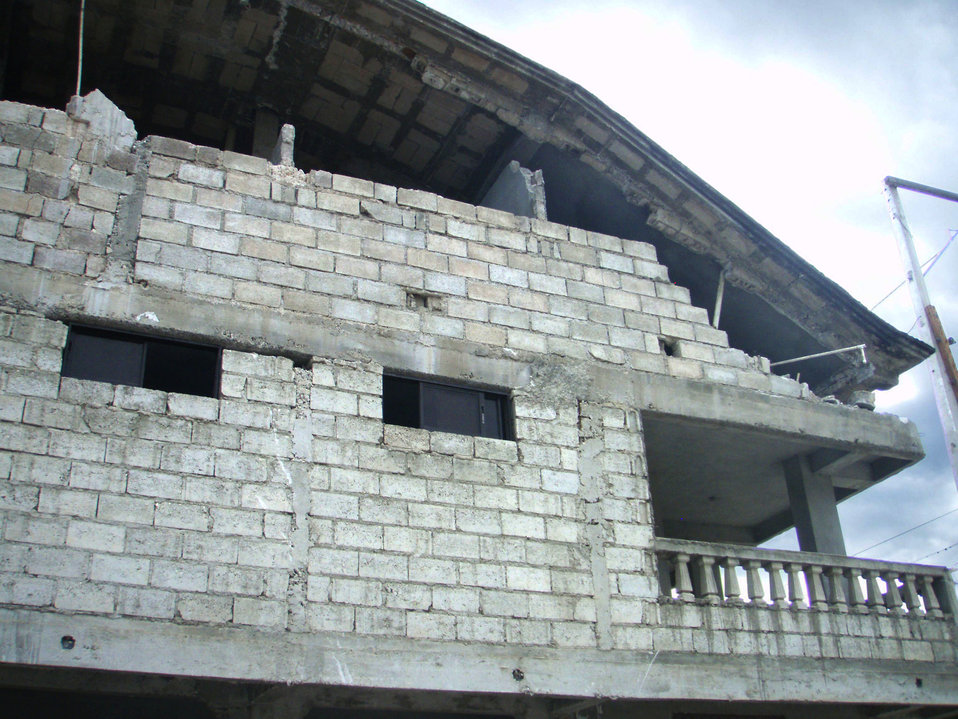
Depicted here, is some of the devastating damage inflicted upon the country of Haiti in the aftermath of the 2010 earthquake. This image was one of many captured by Lt. Cmdr. Gary Brunette, a United States Public Health Service (USPHS) officer, who'd been deployed to this Caribbean region.